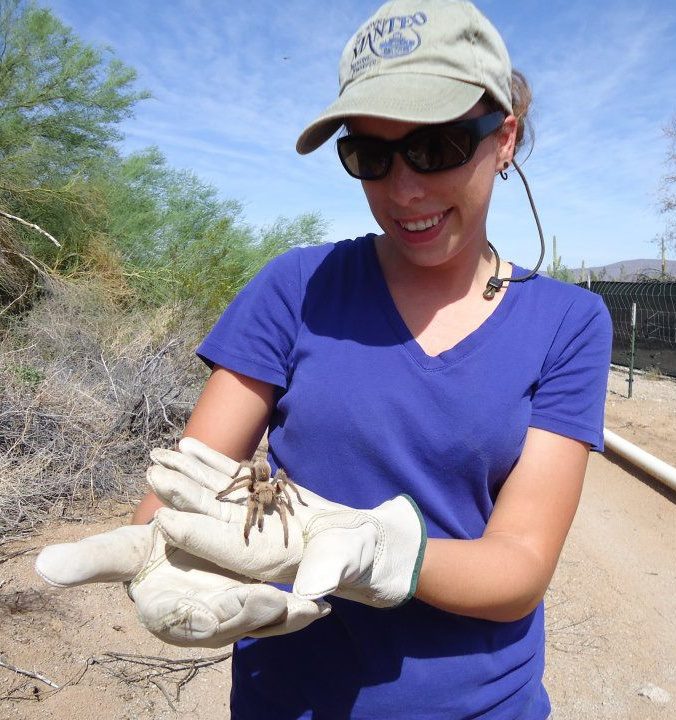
Molly McCarter with female blonde tarantula

Arizona National Wildlife Refuge Complex
2011 Wilderness Fellow Molly McCarter with female blonde tarantula